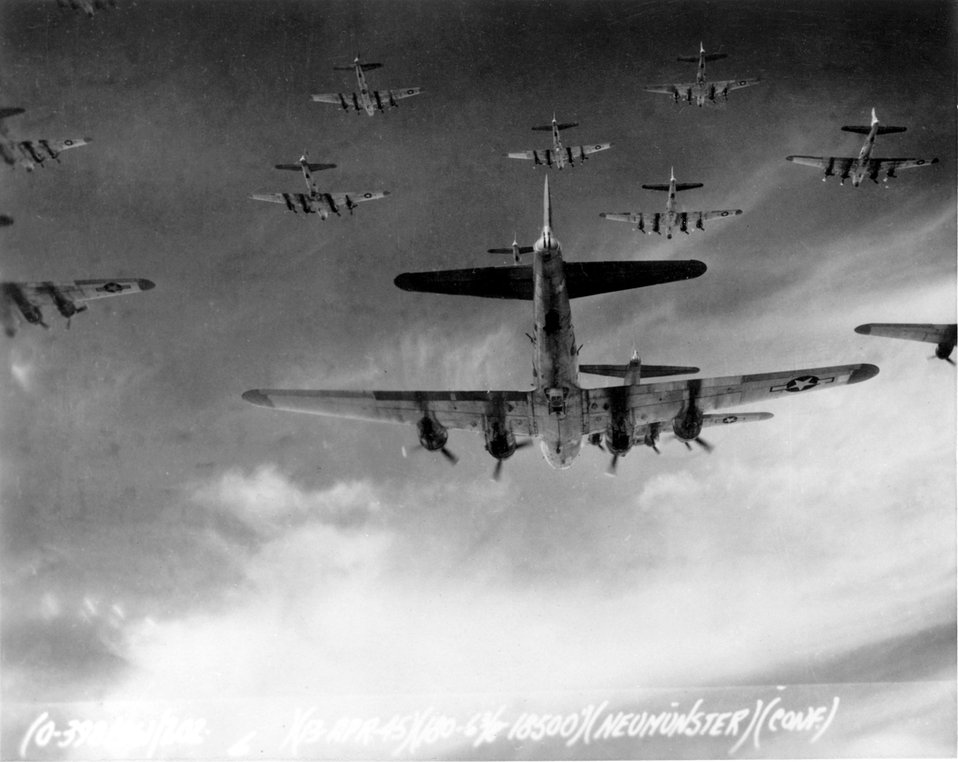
Living legends

OVER GERMANY -- B-17 Flying Fortresses from the 398th Bombardment Group fly a bombing run to Neumunster, Germany, on April 13, 1945. On May 8, Germany surrendered, and Victory in Europe Day was declared.